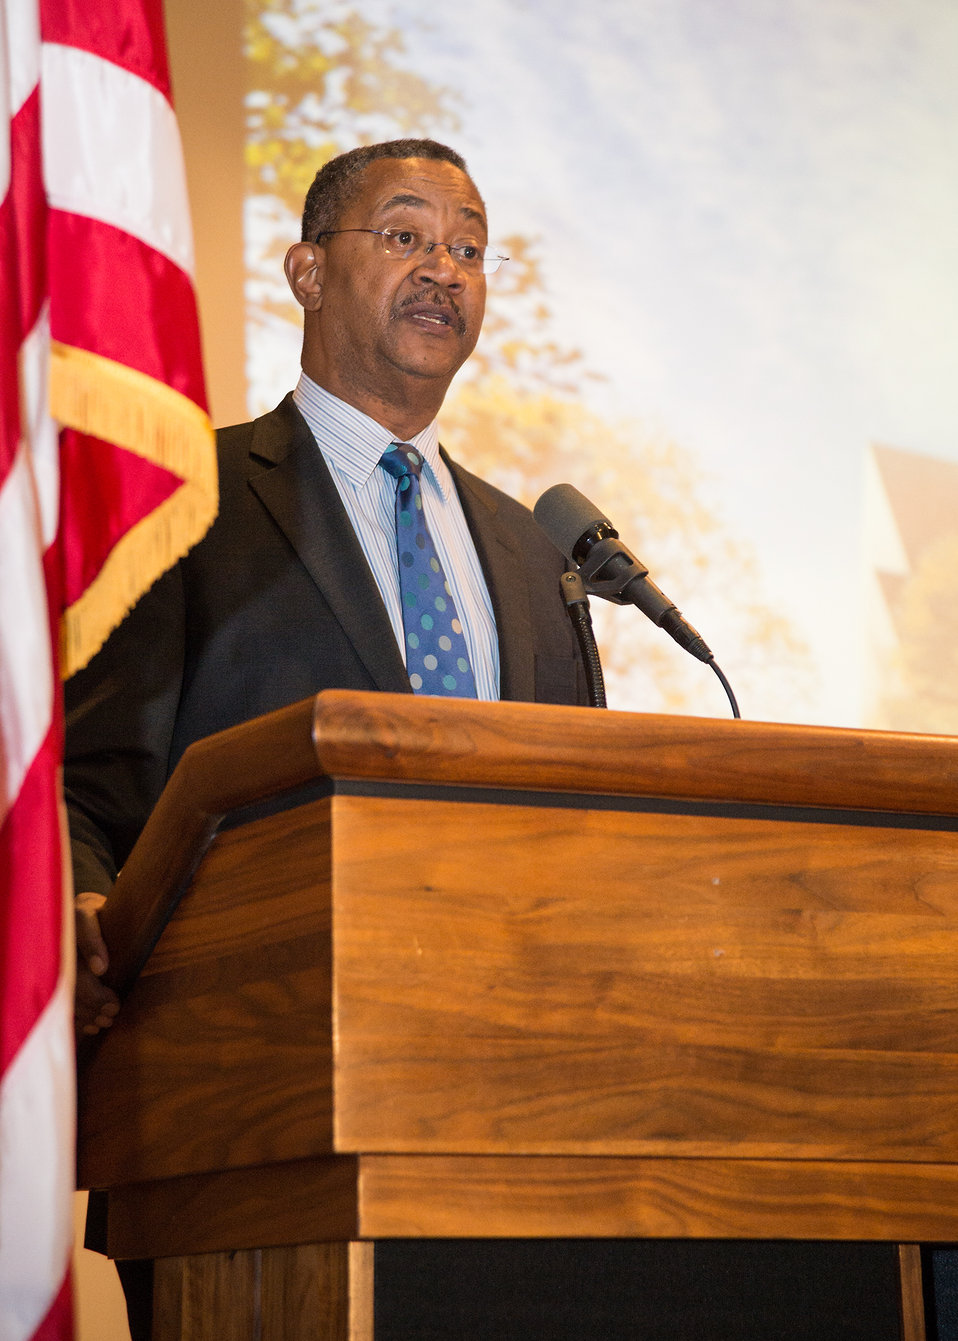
Smithsonian National Museum of African American History and Culture Partnerships and International Programs Director John W. Franklin is the keynote speaker at the U.S. Department of Agriculture's (USDA) Dr. Martin Luther King Jr. and National Service Day in Washington, D.C. on Wednesday, Jan. 15, 2014. The Smithsonian National Museum of African American History and Culture will be the 19th of the Smithsonian Institution.